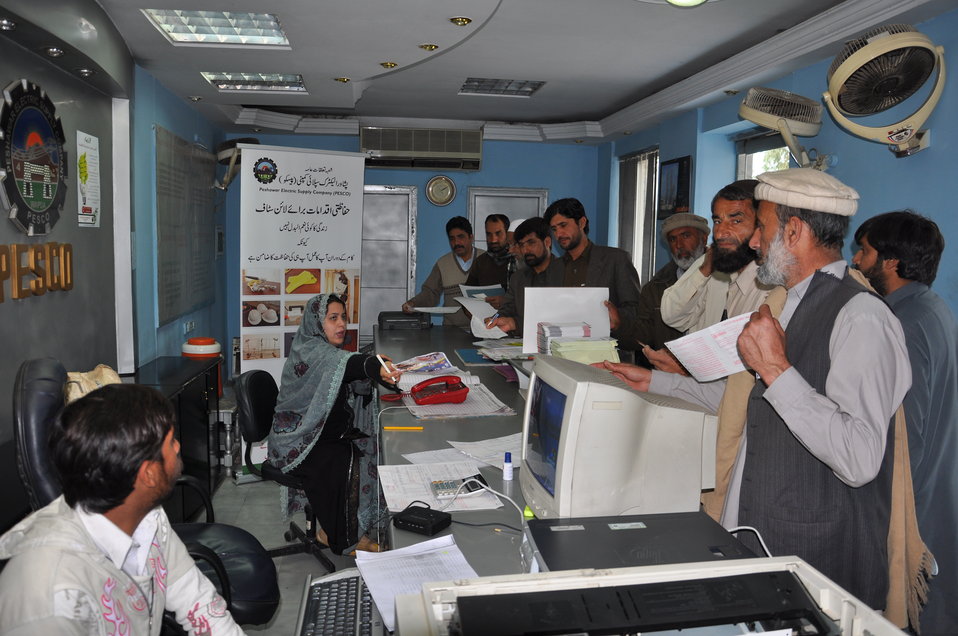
USAID helps power distribution companies to reach out consumers

The USAID Power Distribution Program is facilitating PESCO’s PR department in reaching out to consumers, through the provision of consumer outreach material. This material better assists PESCO in informing consumers about energy conservation, electricity theft and energy efficiency. PESCO is utilizing this material in its own conservation campaigns which will effectively contribute in PR capacity building and in promoting a softer image of the company.